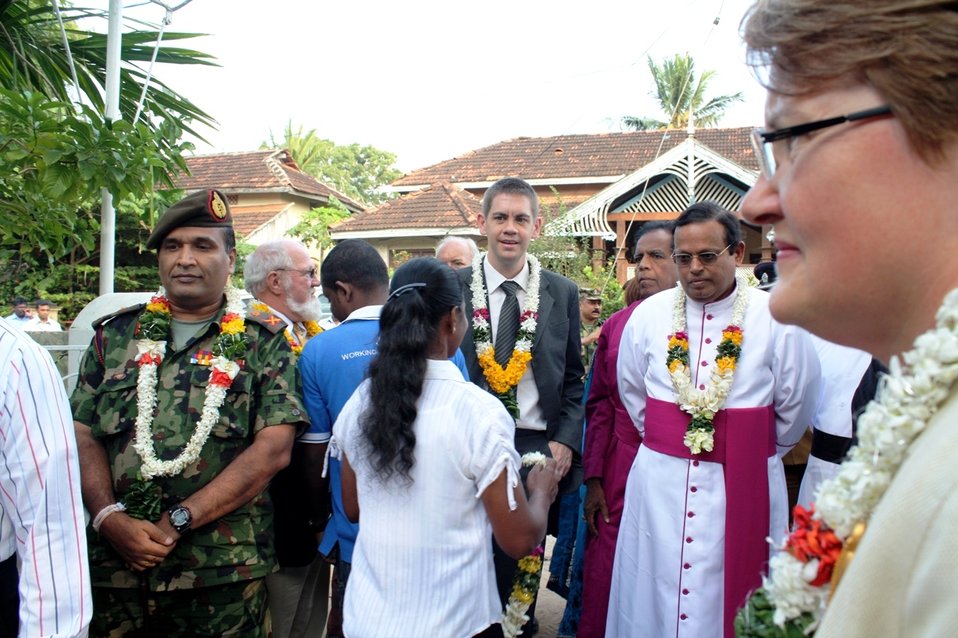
PAO Anderson Speaks With Sri Lankans

Public Affairs Officer Jeff Anderson speaks with Sri Lankans at the opening of the American Corner Jaffna in Colombo, Sri Lanka, on January 24, 2011.